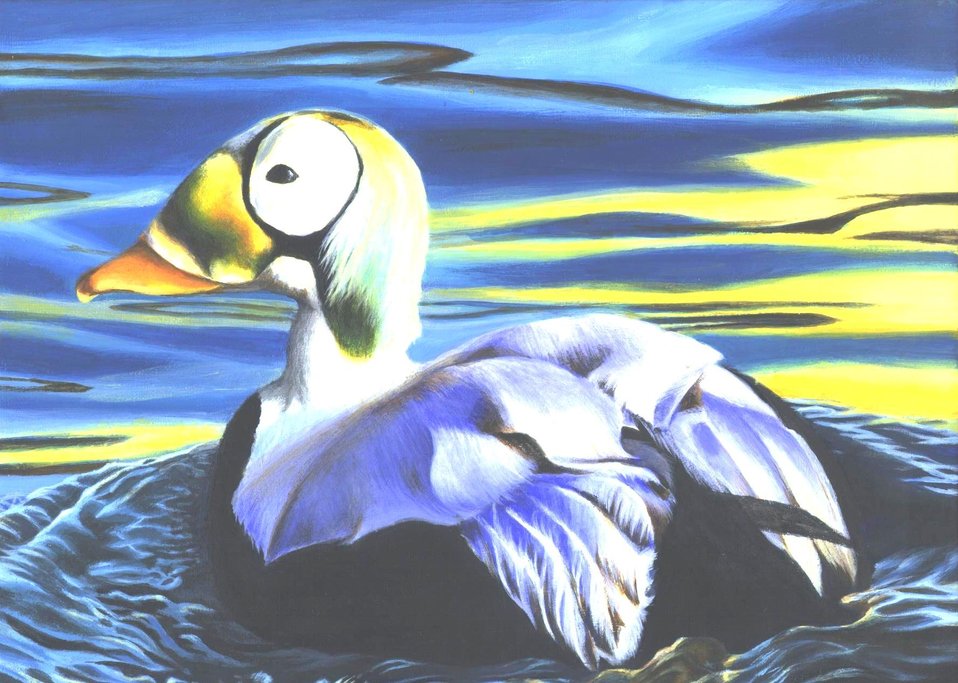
Delaware

2012 Jr Duck Stamp Program
State Best of Show
Delaware